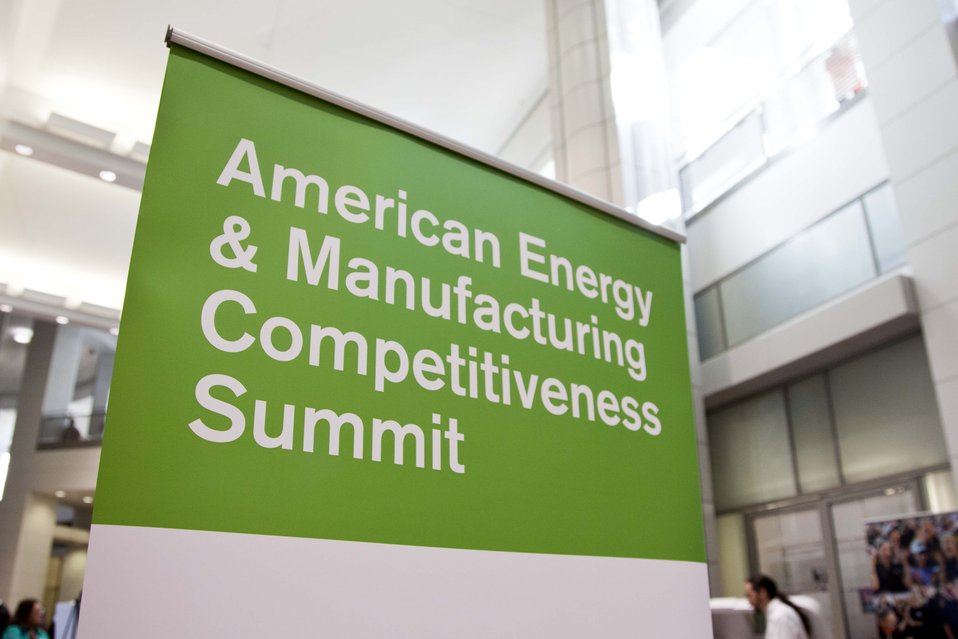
AEMC Summit

In partnership with the Council on Competitiveness, the Energy Department hosted the first American Energy and Manufacturing Competitiveness (AEMC) Summit in Washington, DC. A culmination of a series of dialogues held across the country over the past year, the summit focused on how we can increase U.S. competitiveness in clean energy manufacturing.